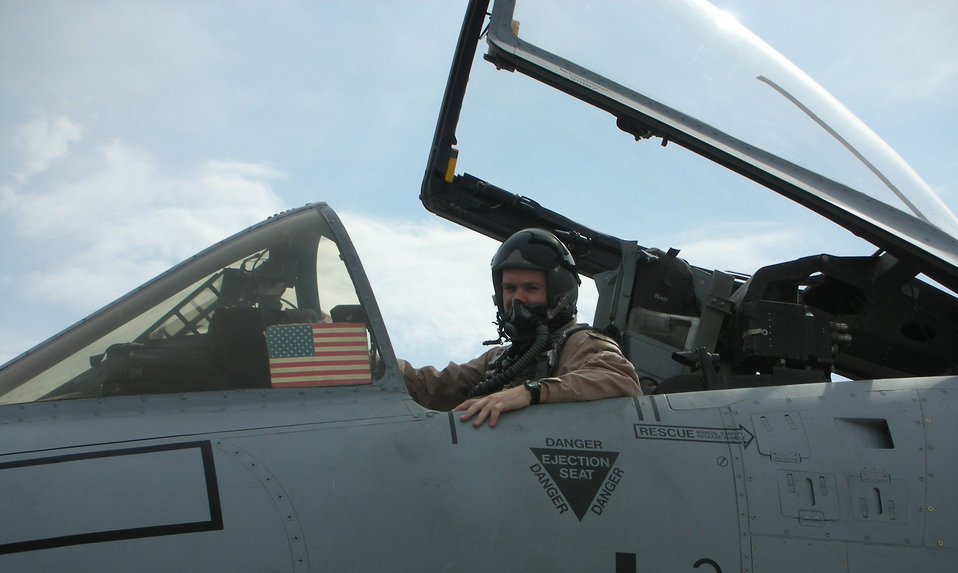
A Sunday unlike any other

Capt. Dennis Hargis sits in the cockpit of his A-10 Thunderbolt II at Bagram Air Base, Afghanistan. The captain recently came to the aid of a friendly convoy under attack in what he describes as